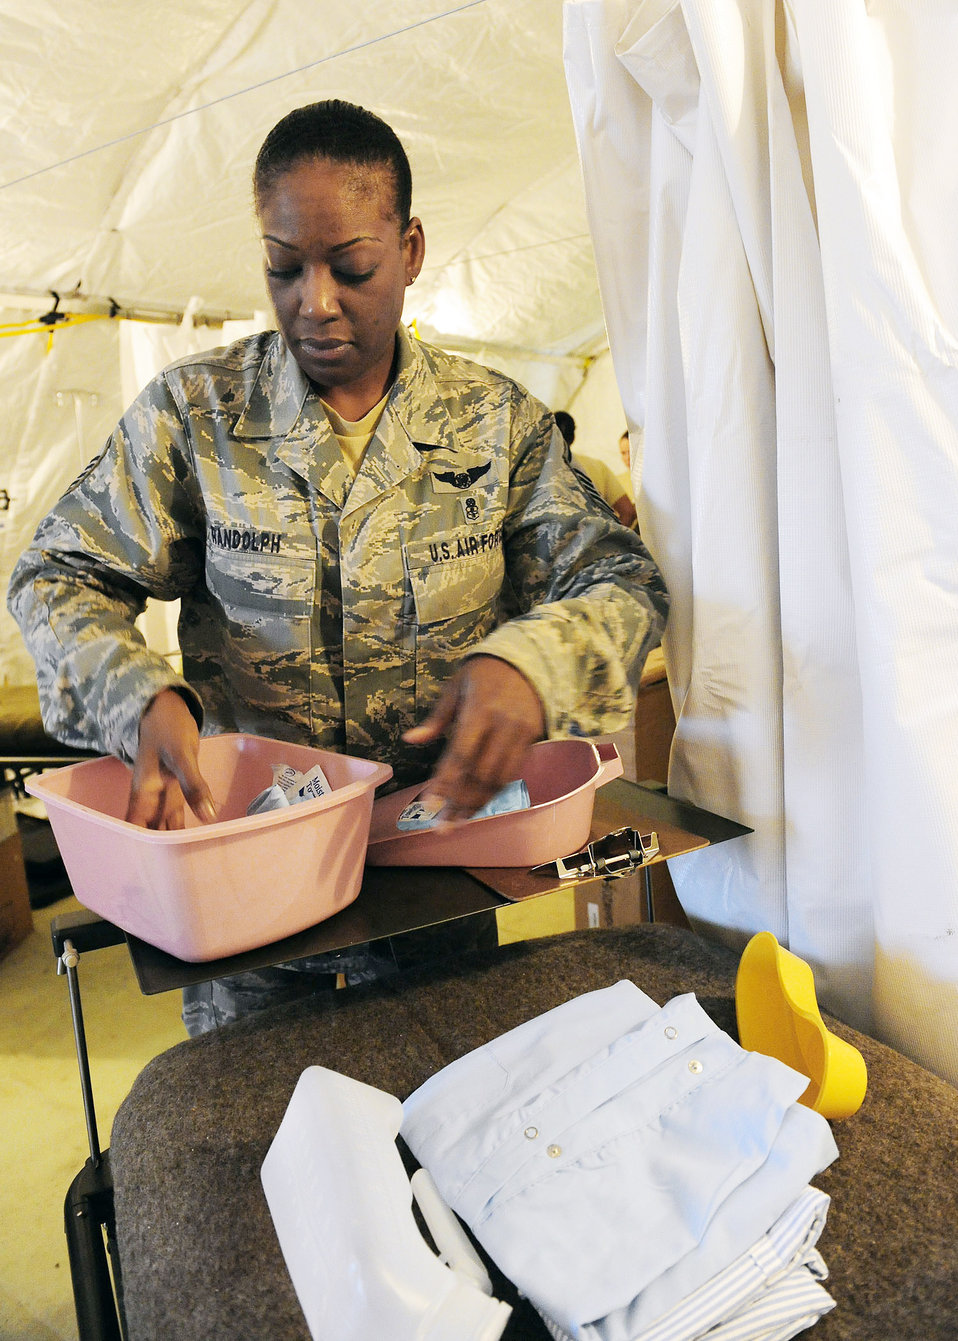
Airmen, Chileans treat patients at new expeditionary hospital

Master Sgt. Kelly Randolph packages a patient admission kit March 13, 2010, in Angol, Chile. The kit provides comforts for overnight patients by providing pajamas, dental kits and other items for patient care. Sergeant Randolph is assigned to the 81st Medical Operations Squadron at Keesler Air Force Base, Miss.